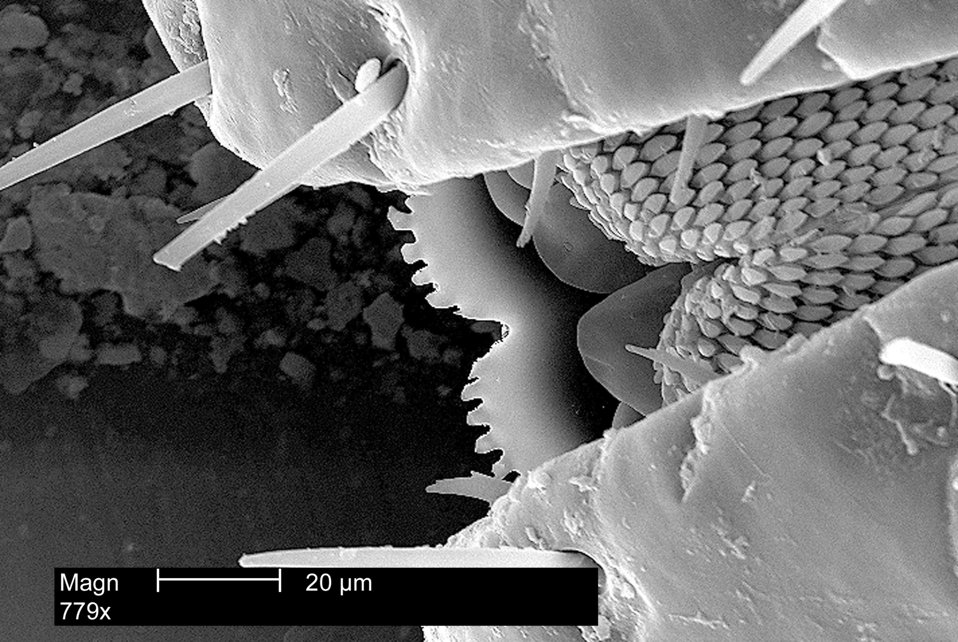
Enlarged view of mouth parts of an American Dog Tick, Dermacentor variabilis, magnified 779x.